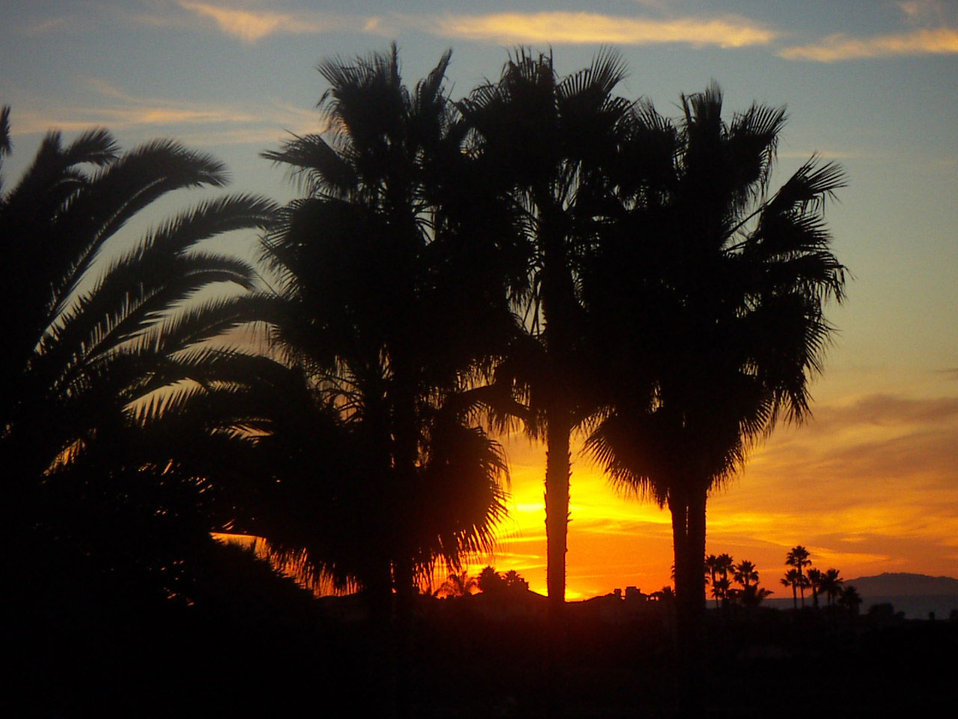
Pacific coast sunset

Shot in newport beach, ca on 28 nov 2005.